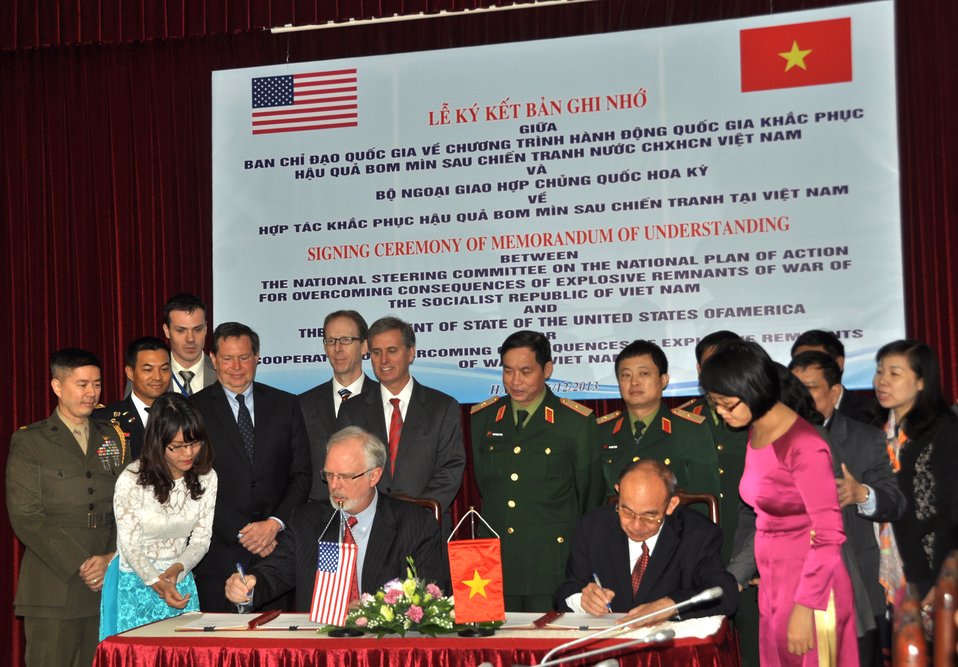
U.S. Embassador to Vietnam David Shear (left) and Mr. Bui Hong Linh, Vietnam’s Vice-Minister of the Ministry of Labor, Invalids and Social Affairs (MOLISA) and Committee 504 Vice-Chairman, sign the MoU.

Hanoi, December 16, 2013.